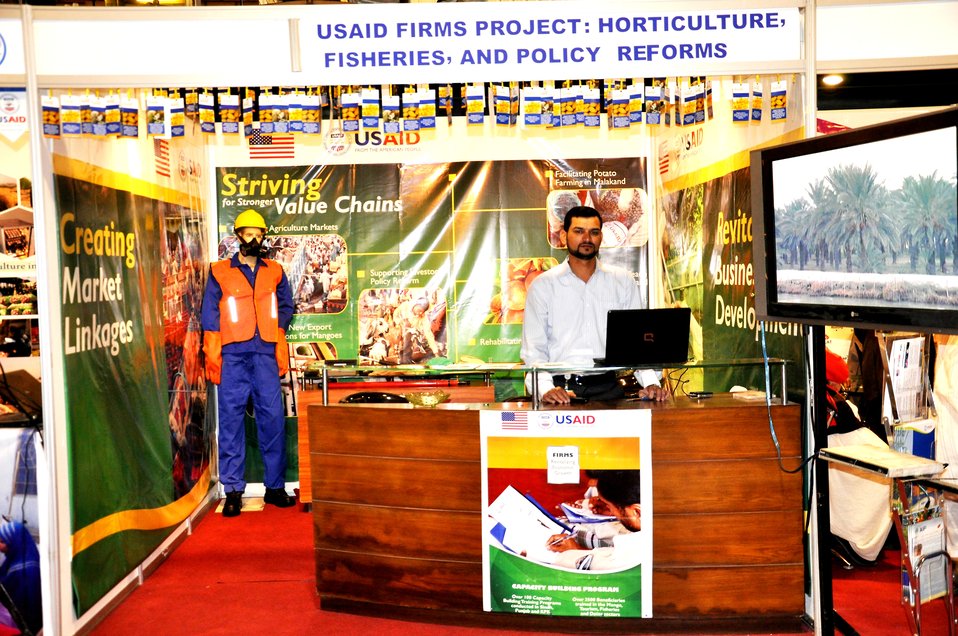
FIRMS project stall at the DAWN Agri Expo